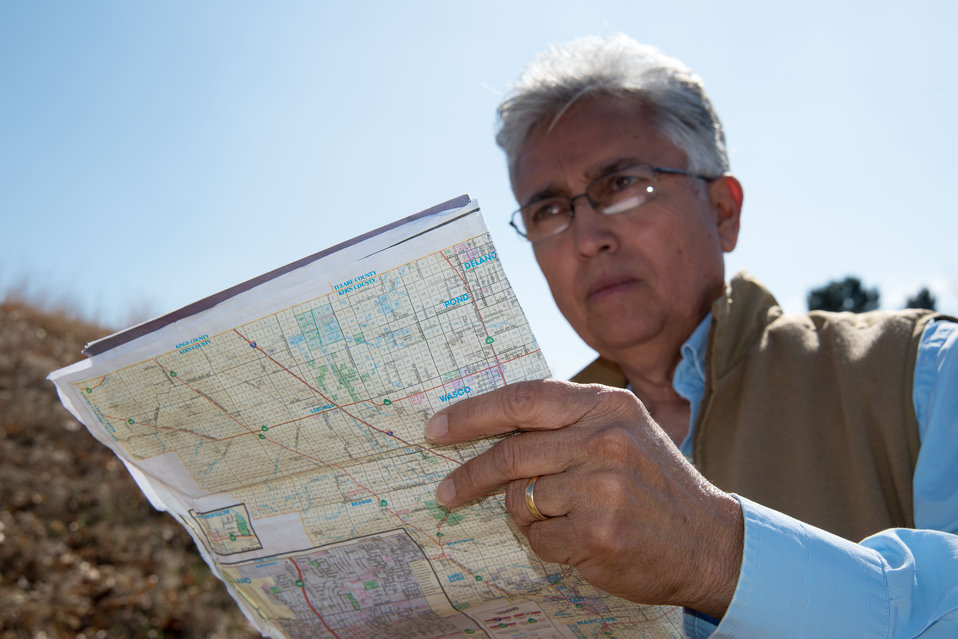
Retired U.S. Department of Agriculture (USDA) Natural Resource Conservation Service (NRCS) soil conservationist Raul B. Ramirez observes drought conditions in Kern County, CA on Wednesday, Feb. 26, 2014.